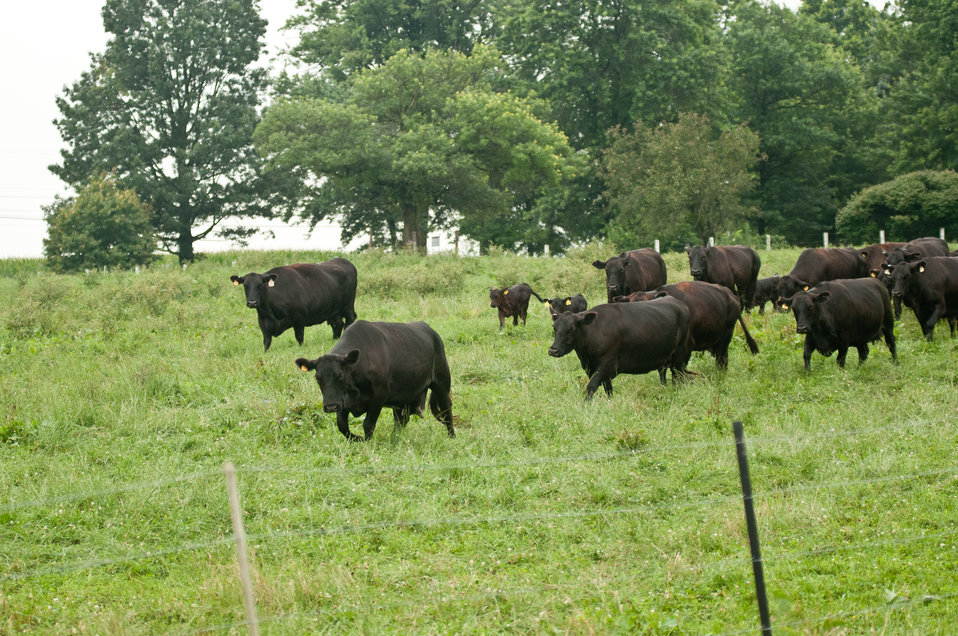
Black Angus cows and calves graze organic pastures, and for added nutrition and variety, they enjoy a daily feeding of sweet silage at Nick’s Organic Farm, owned by Nick Maravell, in Adamstown, MD on Friday, July 12, 2013. The white plastic wrapped bales of pasture grass and alfalfa have been fermenting for months to create sweet silage that stores well and can be used to feed cattle at varying amount all year long. The fermentation process sweetens the taste and increases the vitamin levels. The farm produces Black Angus beef, chicken, turkey, eggs, hay, soybeans, corn, alfalfa, orchard grass, rye; and other crops. The cattle are 100% grass-fed receiving certified organic pasture, certified organic hay (in winter), water and mineral salts mixed with sea kelp. The cattle are not fed hormones, antibiotics or animal products. Poultry feed from grain is ground from organic grain. The poultry also graze on organic pastures. The farm has conducted on-farm research with federal, state and non-profit agencies to refine organic practices. An organization such as the U.S. Department of Agriculture (USDA) Agricultural Research Service (ARS) center in Beltsville has been able to conduct research to improve organic crops and to breed and manage the cattle so that they have.